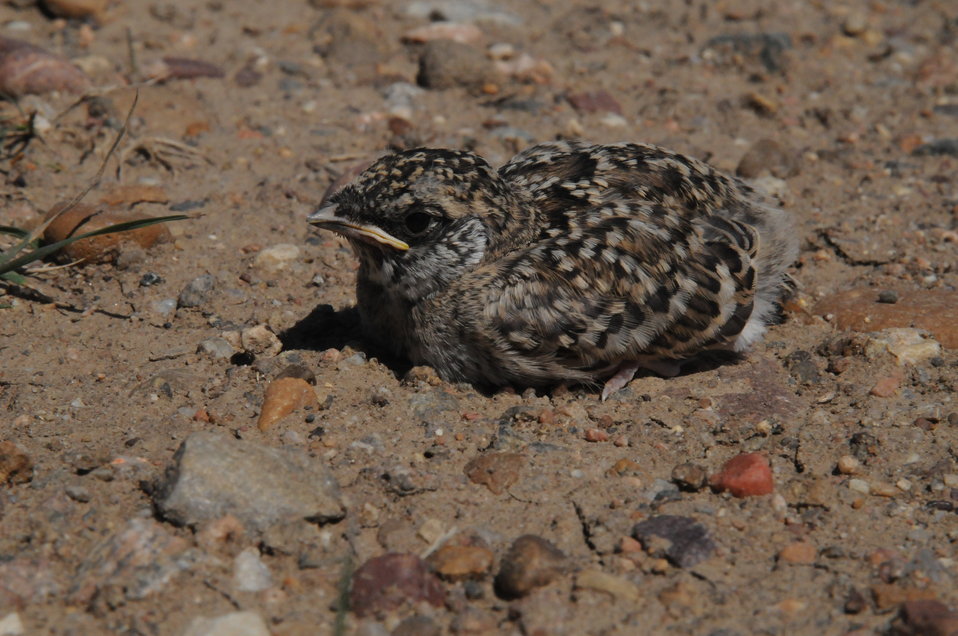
Fledgling Horned Lark. Supported by the Neotropical Migratory Bird Conservation Act.